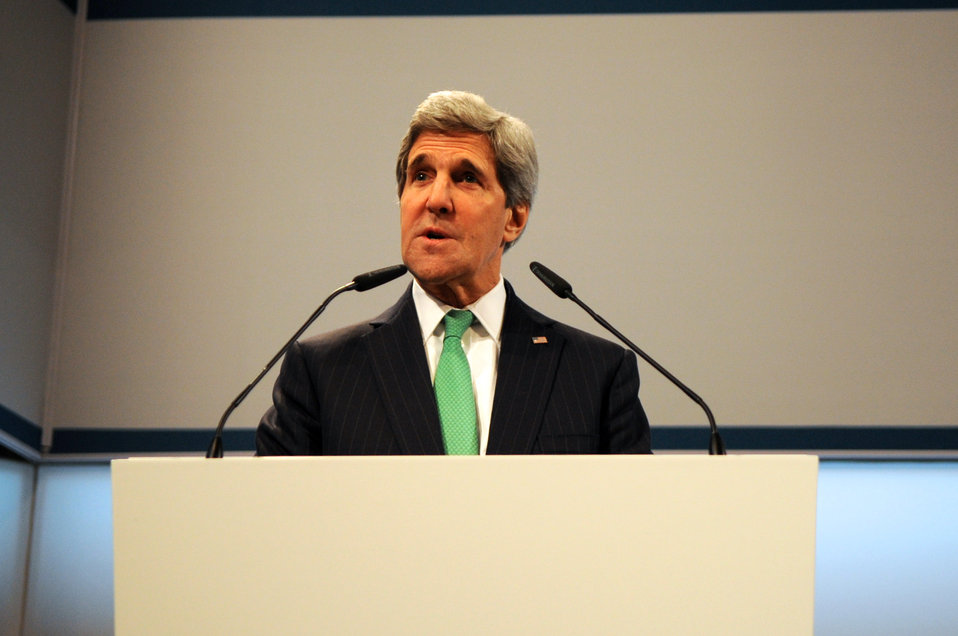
Secretary Kerry Addresses 50th Munich Security Conference

U.S. Secretary of State John Kerry addresses the 50th Munich Security Conference as he and U.S. Secretary of Defense Chuck Hagel make a joint appearance in Munich, Germany, on February 1, 2014.